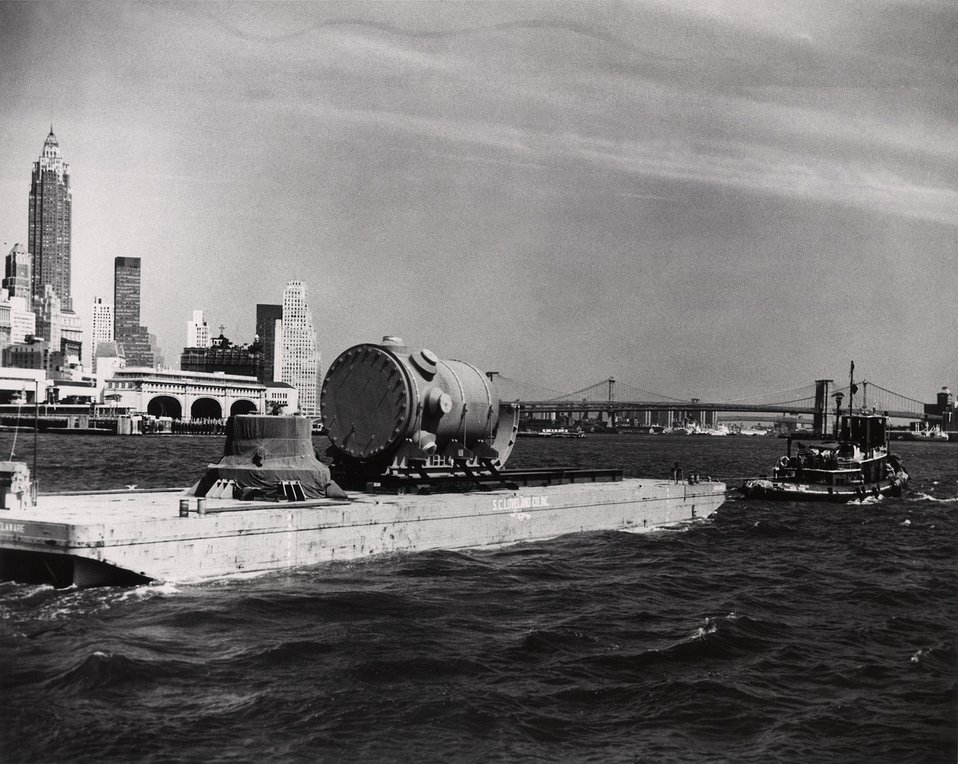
The 402 ton nuclear reactor vessel head for Haddam Neck, passed the New York City's skyline March 29, 1966.